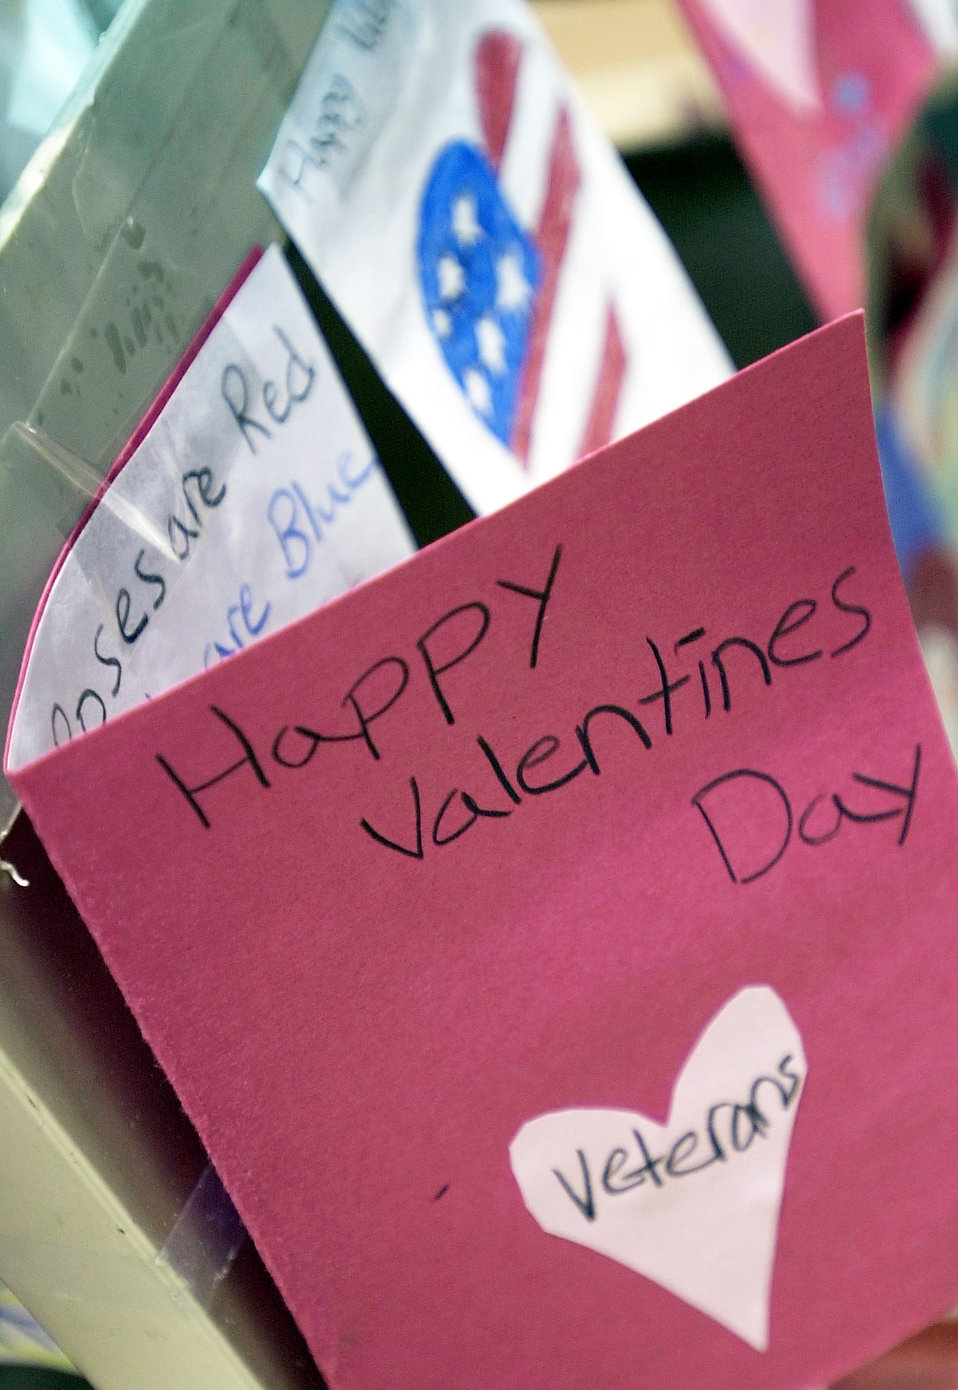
CSAF urges visits to hospitalized veterans

WASHINGTON -- Airmen from Bolling Air Force Base, D.C., and the Pentagon will take part in the National Salute to Hospitalized Veterans at the Baltimore Veteran's Administration Medical Center by delivering valentines to the veterans Feb. 10.